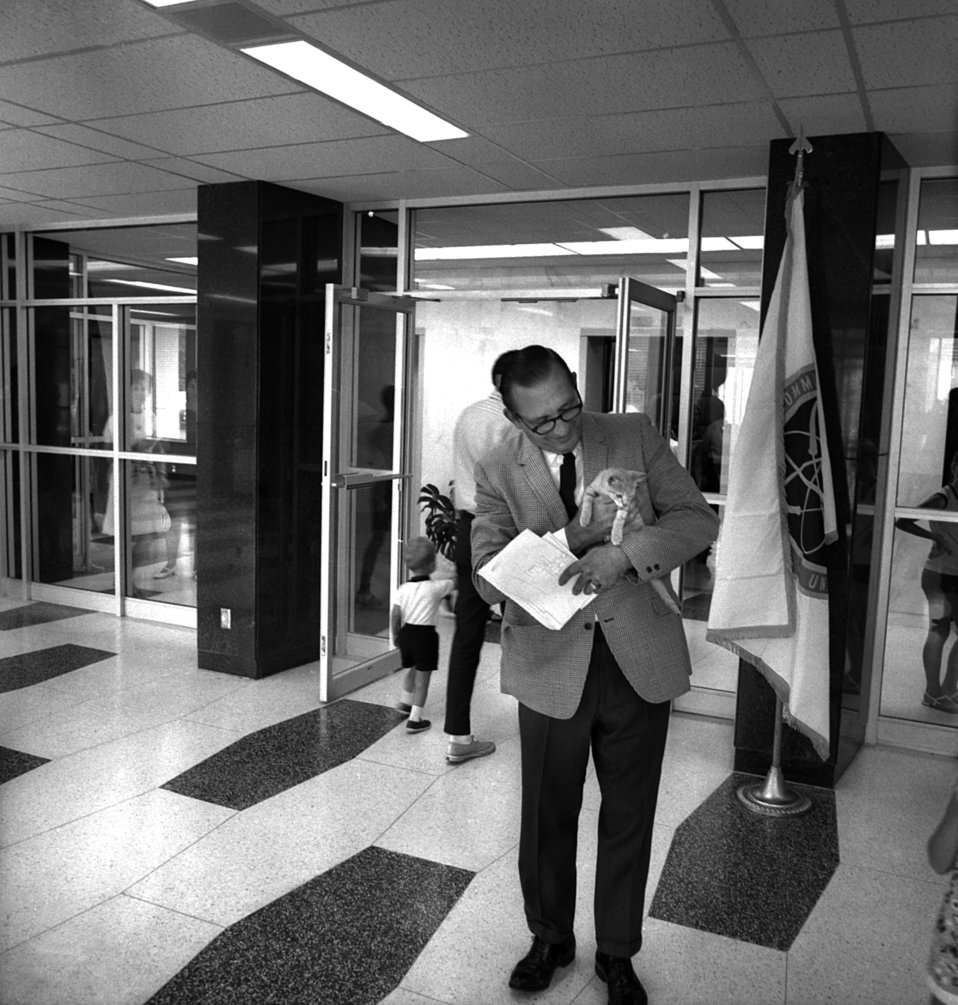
Formal Dedication New AEC (Atomic Energy Commision) - FOB (Federal Office Building) Oak Ridge

70-173c DOE Photo by Frank Hoffman
Formal Dedication New AEC (Atomic Energy Commision) - FOB (Federal Office Building) Oak Ridge Tennessee 6-27-1970